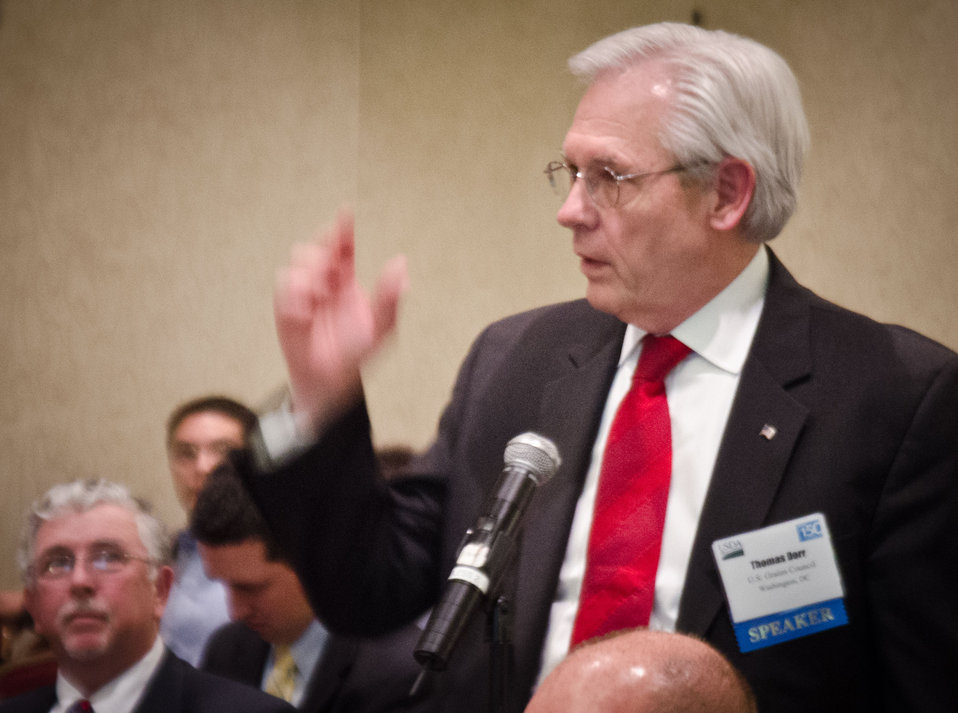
U.S. Grains Council President Thomas Dorr, asked a question, during “The Farm Income Outlook for 2012” session of the Food Prices & Farm Income Track, at the 2012 Agricultural Outlook Forum, “Moving Agriculture Forward, Growing, Innovating and Celebrating 150 Years.” held at the Crystal Gateway Marriott Hotel, Arlington, Virginia, on Friday, February 24, 2012. The session focused on general measures of the financial well being of the farm economy, including USDA’s official outlook for farm income, the distribution of income across farm households, and the competitiveness of the rural economy.